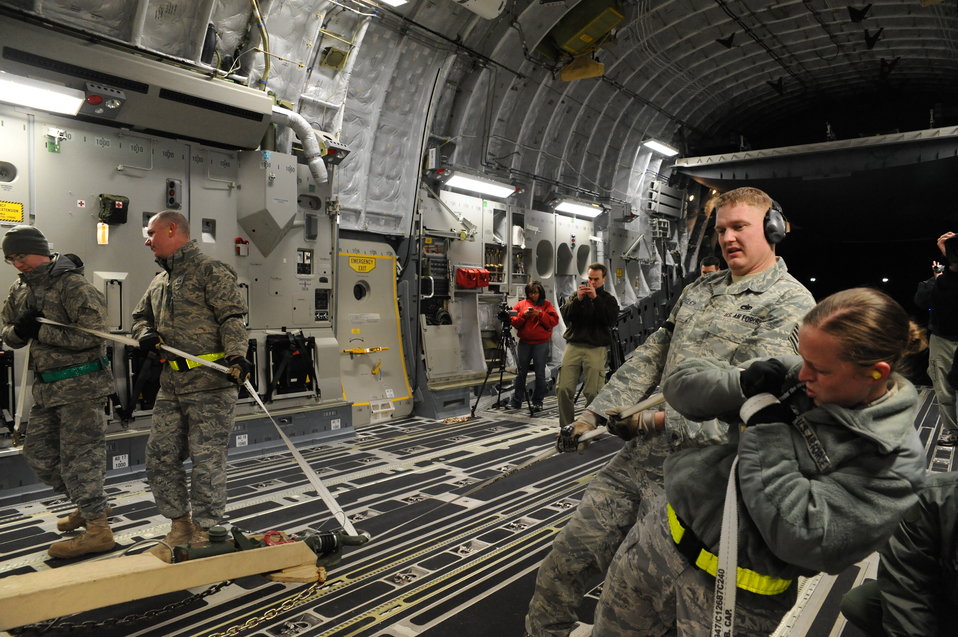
Haiti humanitarian effort

Members of the 305th Aerial Port Squadron load a mobile command and control unit onto C-17 Joint Base McGuire-Dix-Lakehurst, New Jersey, Jan. 15, 2010. Air Mobility Command is responding with all necessary forces and equipment to aide the humanitarian efforts in Haiti.